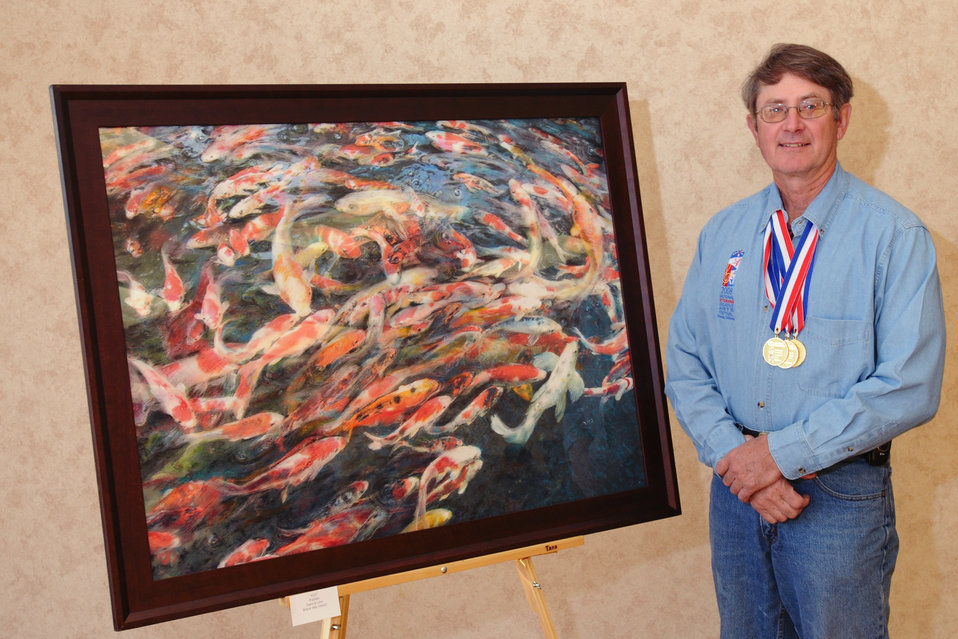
Arts festival gives wounded warriors therapeutic outlet